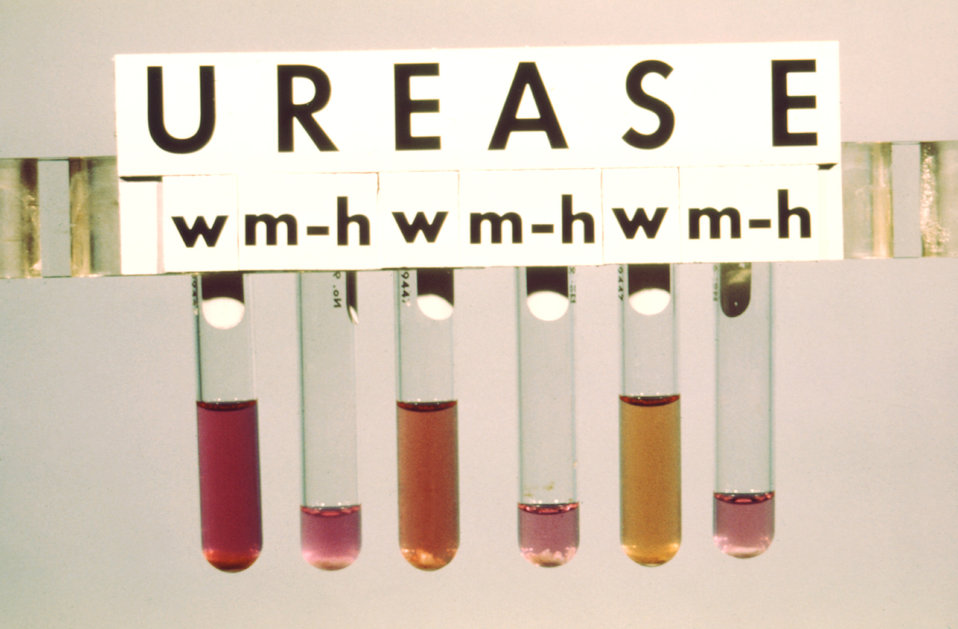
This urease test was used in the taxonomic identification of Mycobacteria spp. bacteria.